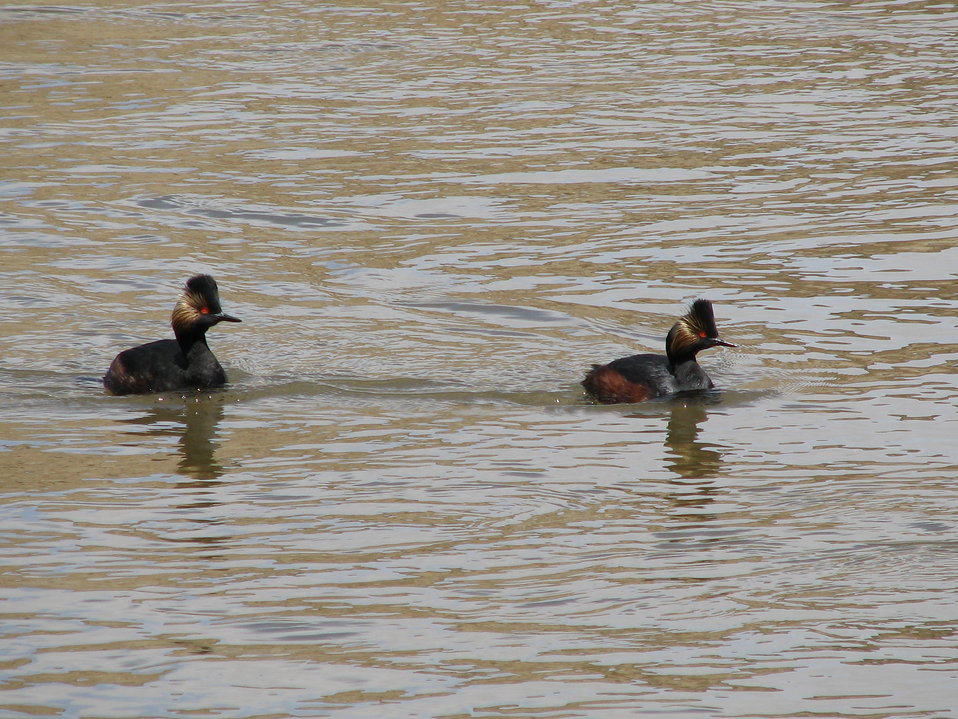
Eared Grebes, North Platte River, Carbon County, WY.

Credit: Pedro 'Pete' Ramirez, Jr. / USFWS